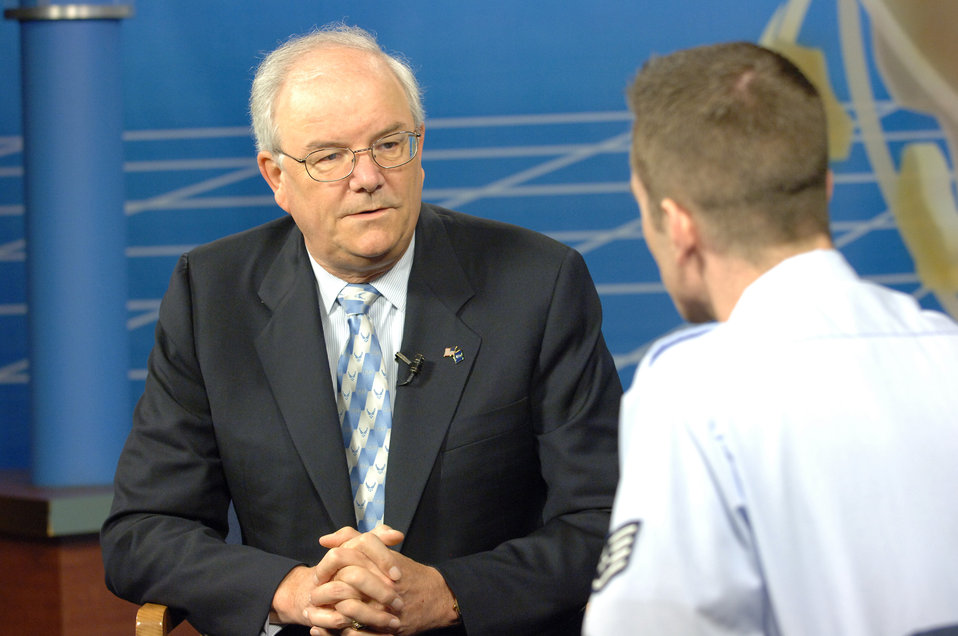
SECAF visits mainland Japan

Staff Sgt. Lee Hoover Jr. conducted an interview with Secretary of the Air Force Michael W. Wynne at Yokota Air Base, Japan, on Friday, March 24, 2006. Sergeant Hoover is with Detachment 10, Air Force News Agency.